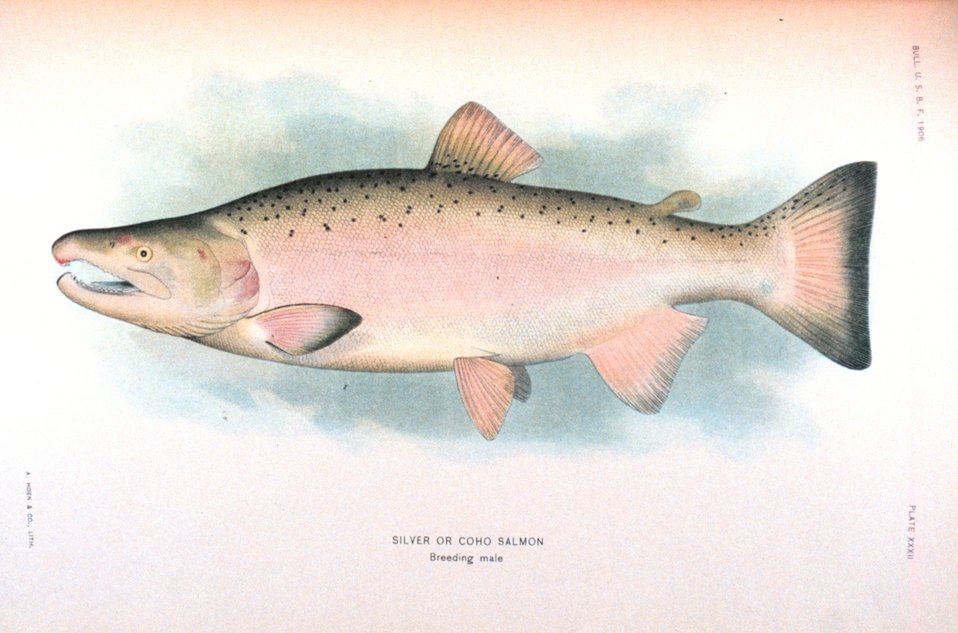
Silver or Coho salmon, breeding male. In: 'The Fishes of Alaska.' Bulletin of the Bureau of Fisheries, Vol. XXVI, 1906. P. 360, Plate XXXII.